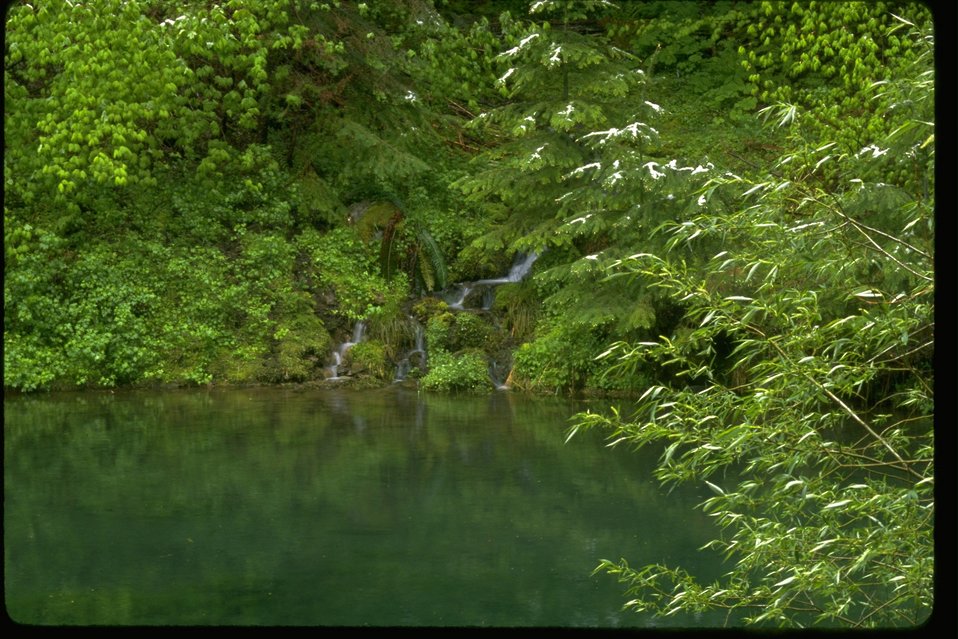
Riparian Area.